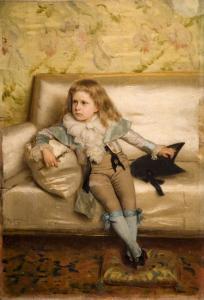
Gordigiani Edoardo